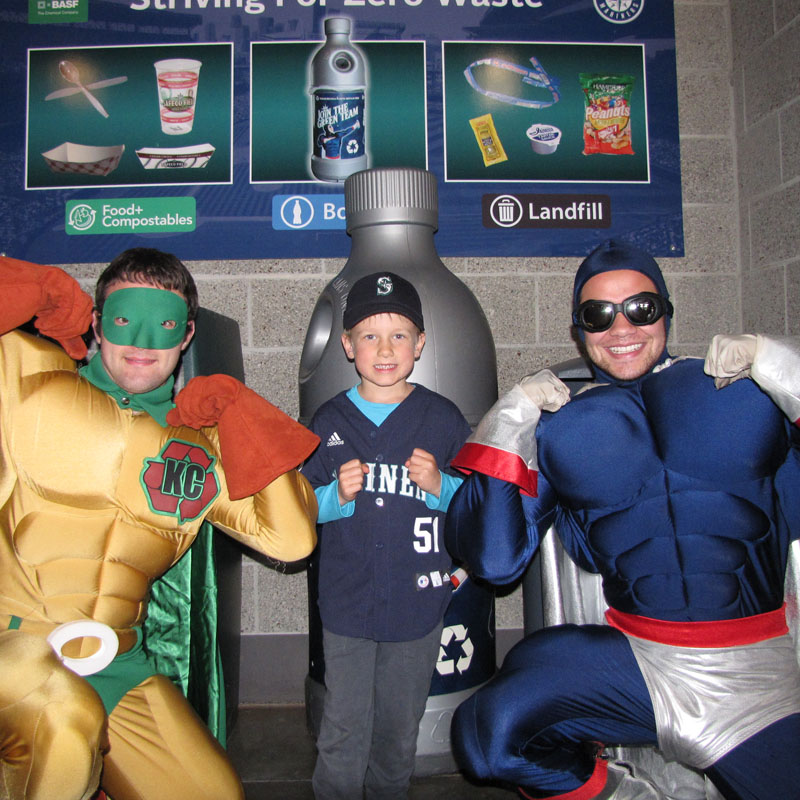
More Recyclers

At EPA, #WeRecycle. Learn how you can too: www2.epa.gov/recycle